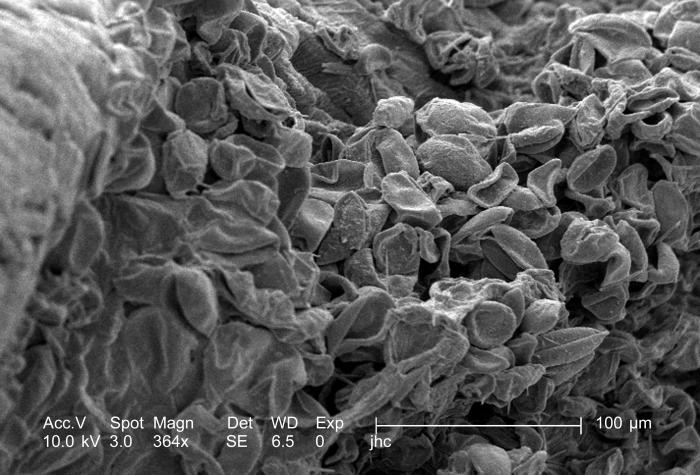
Magnified 364x, this scanning electron micrograph (SEM) revealed some of the morphologic ultrastructure found on the petal of an unidentified specie of "spiderwort" flower, Tradescantia sp.. Note the myriad of textures comprising the petal's surface, a structure that is actually a modified leaf.